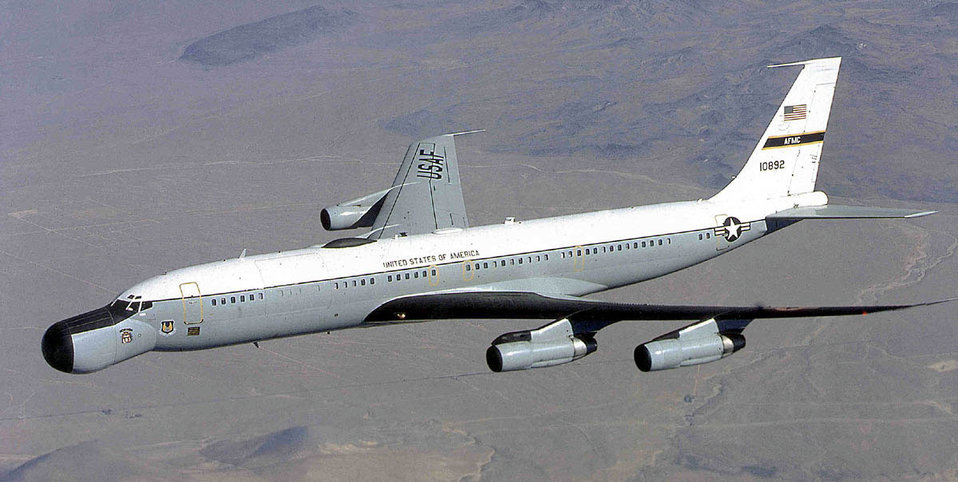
Bird of Prey

FILE PHOTO -- An EC-18 aircraft from the 452nd Flight Test Squadron at Edwards Air Force Base, Calif., will transport NASA scientists overseas to study the Leonid meteor storm. The EC-135E ARIA, nicknamed